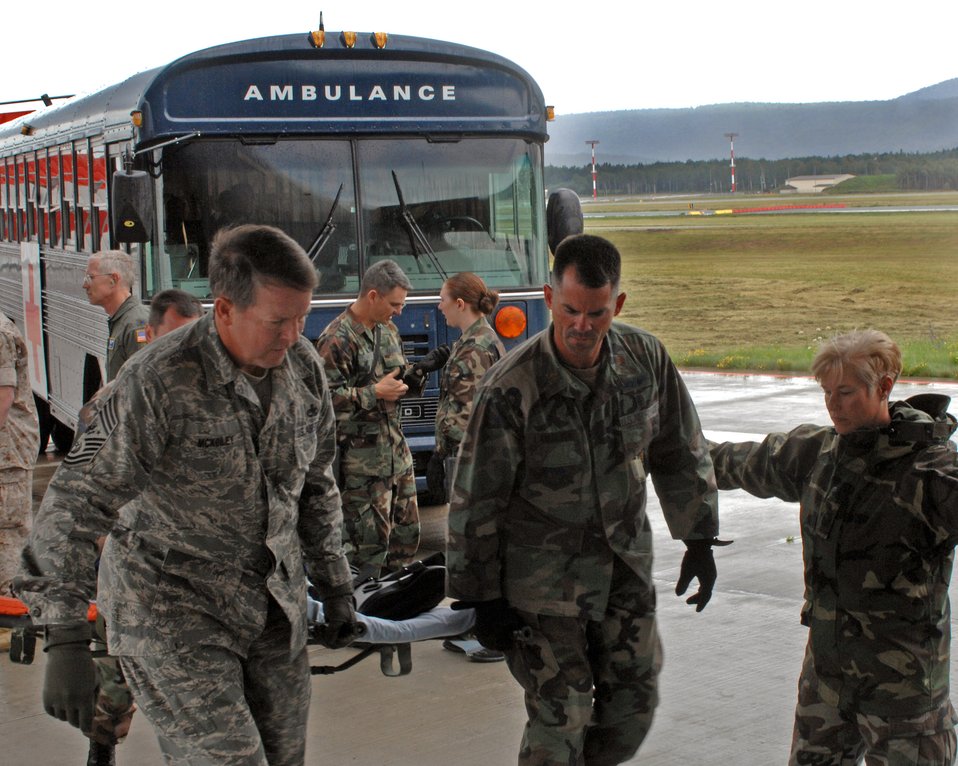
CMSAF assists with aeromedical evacuation

Chief Master Sgt. of the Air Force Rodney J. McKinley and Maj. Paul Langevin help load a patient onto an aeromedical evacuation flight July 10 at Ramstein Air Base, Germany. Chief McKinley followed patients through Landstuhl Regional Medical Center to the Contingency Areomedical Staging Facility and finally on the flight back to the states. Major Langevin is with the 435th Aerospace Medicine Squadron.